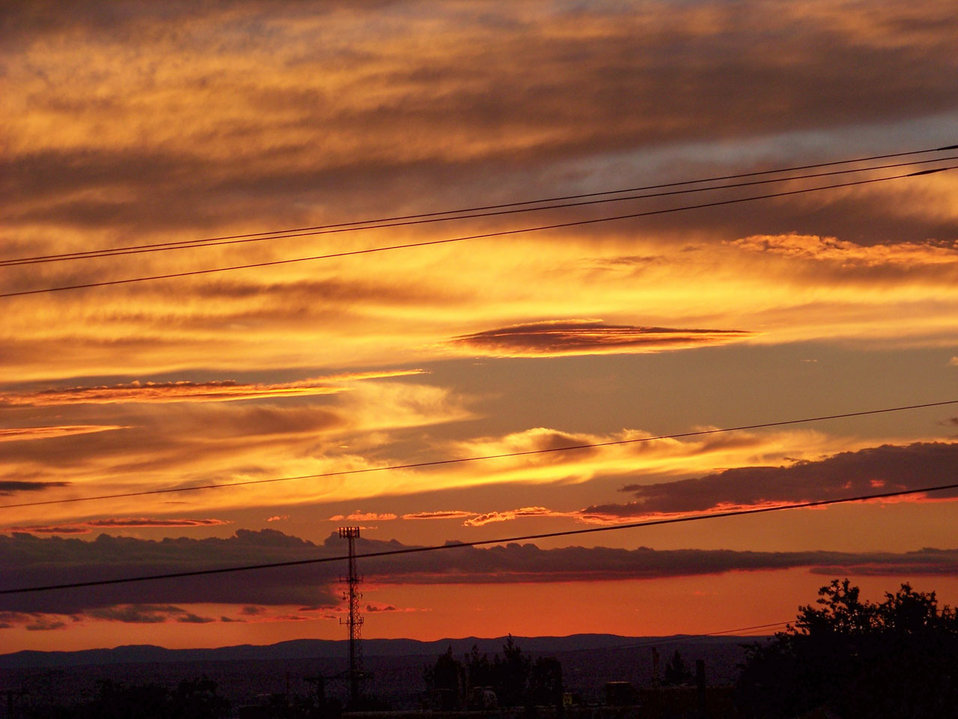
Awesome

Sunset out my front door.